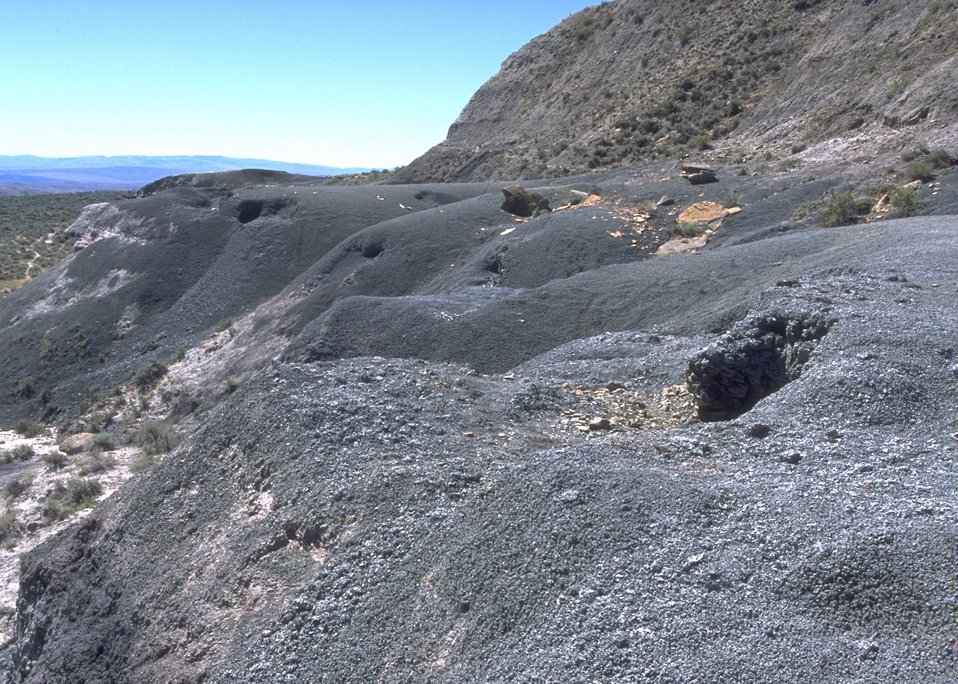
General view of area where fossils are found showing areas of digging, Cedar Ridge Paleo area, Worland Field Office.